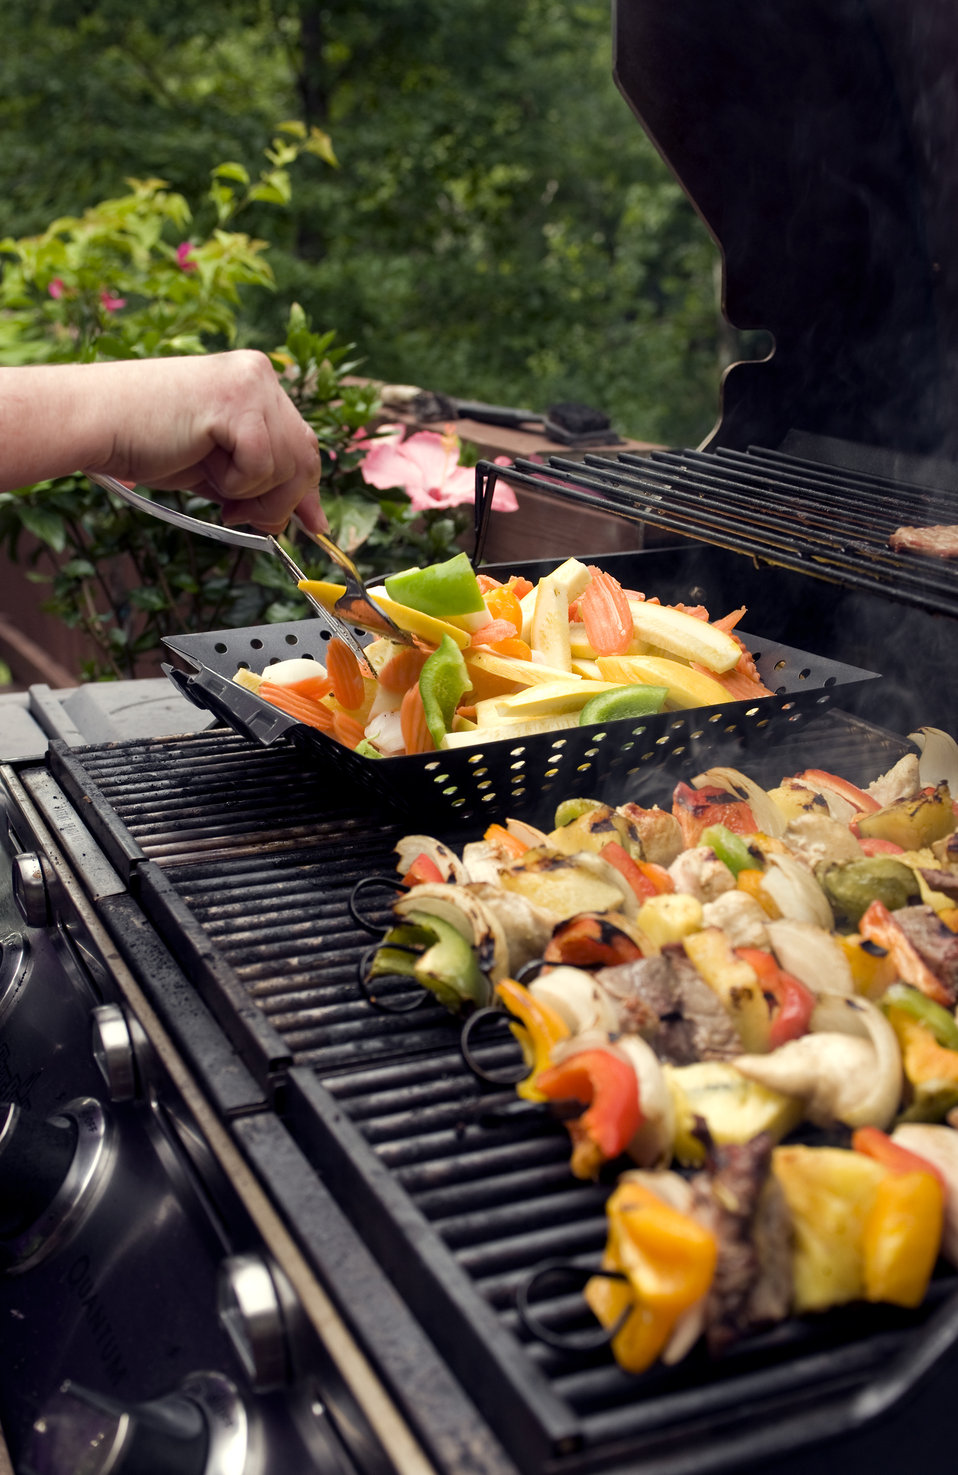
This image depicts four freshly-prepared kabobs, which had been set atop an outdoor stainless steel gas grill, and were cooking. The skewers consisted of chicken, peppers, onions, and pineapple. Note that the chef was attending to a grilling dish, also set top the grill, which was filled with an additional assortment of vegetables, being prepared as an accompanying dish to the kabobs.